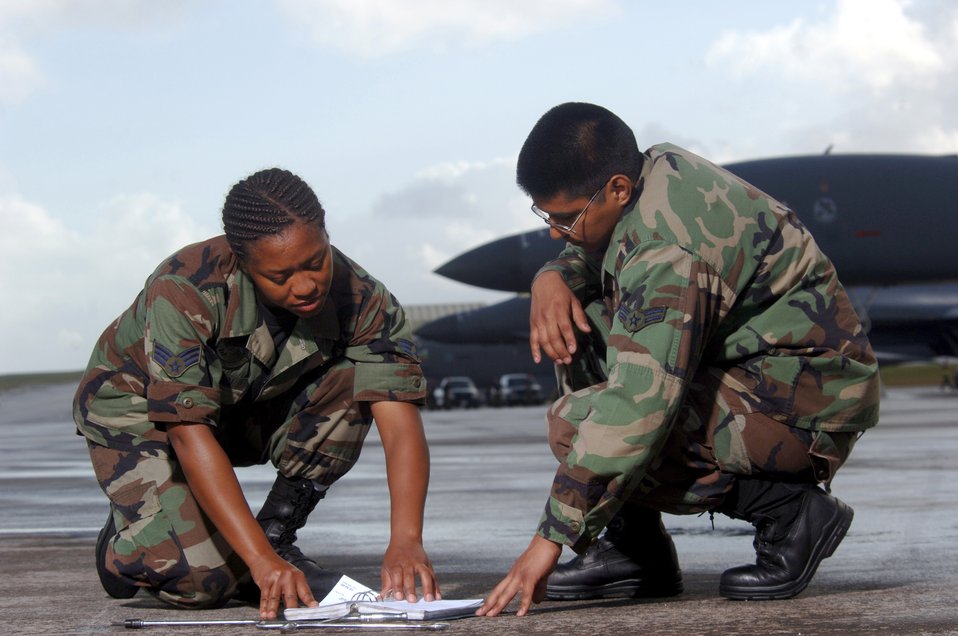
B-1B Lancers

ANDERSEN AIR FORCE BASE, Guam (AFPN) -- Senior Airman Tasha McKain and Airman 1st Class Tomas Loyde reference their technical order during a preflight inspection of their B-1B Lancer. The Airmen, both crew chiefs from the 28th Aircraft Maintenance Squadron at Ellsworth Air Force Base, S.D., are here for an air expeditionary deployment. They provide the U.S. Pacific Command a continuous bomber presence in the Asia-Pacific region.